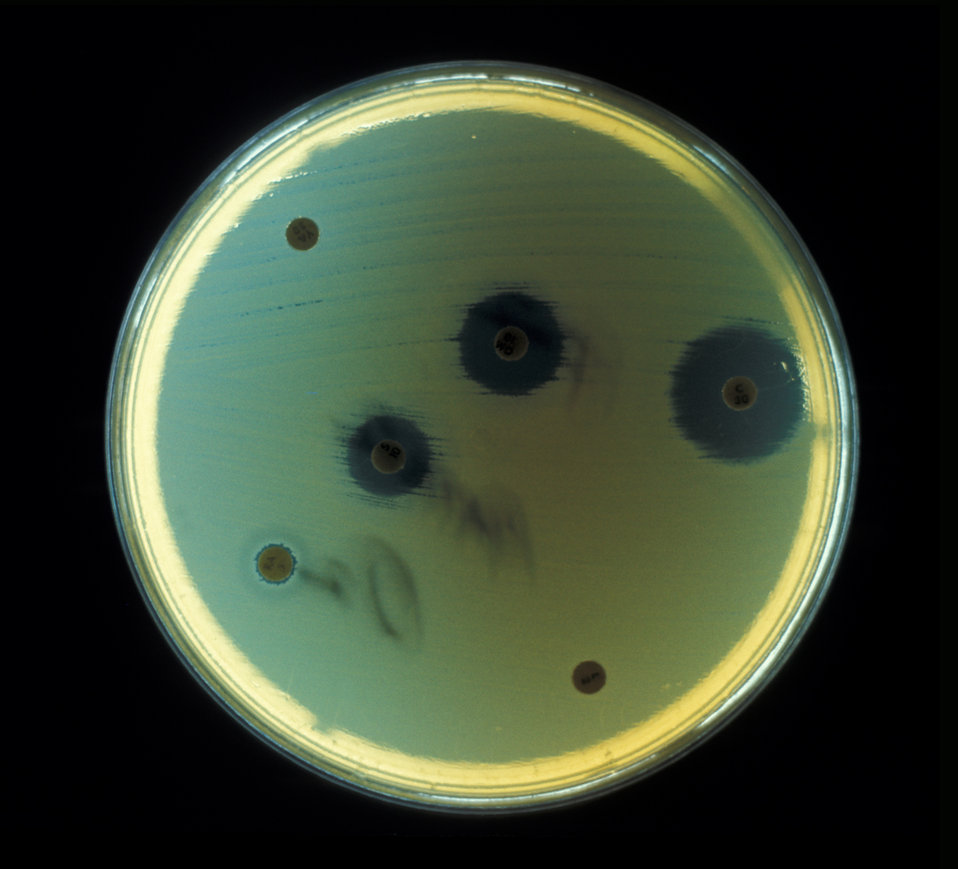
Aerobic bacteria, Escherichia coli, cultured on an agar plate for drug sensitivity test in an anaerobic environment.